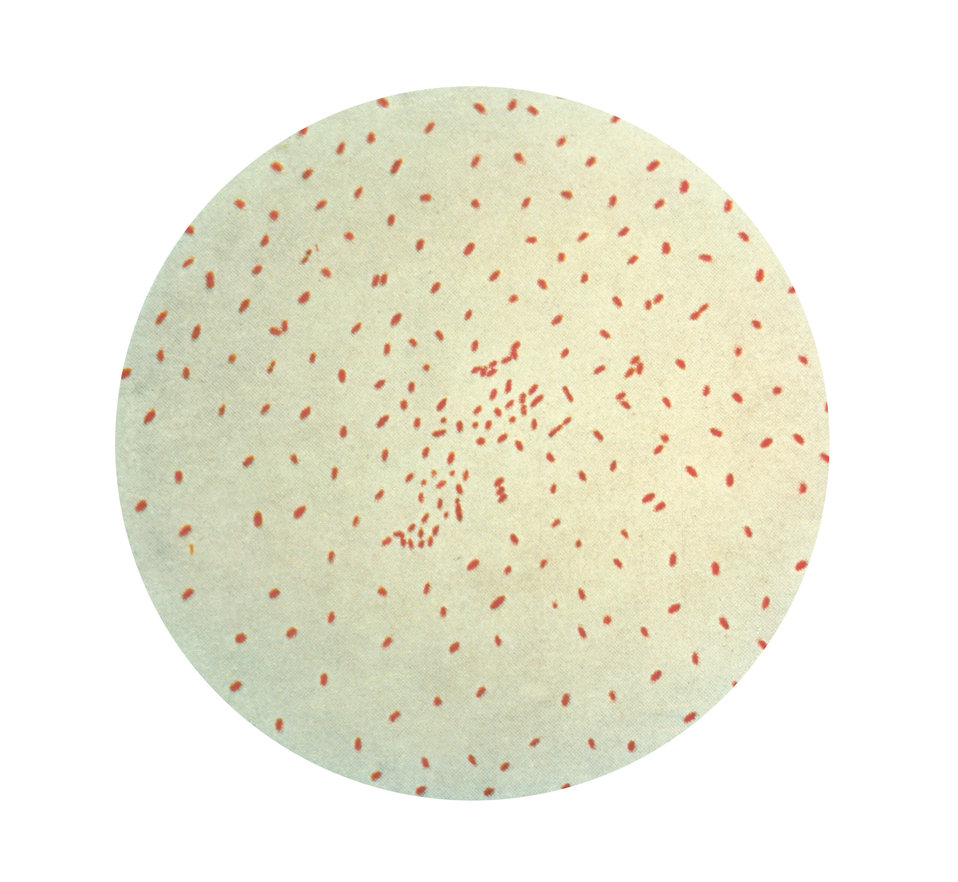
This Gram-stained photomicrograph depicts numbers of Bordetella pertussis bacteria, which is the etiologic pathogen for pertussis, also known as whooping cough.